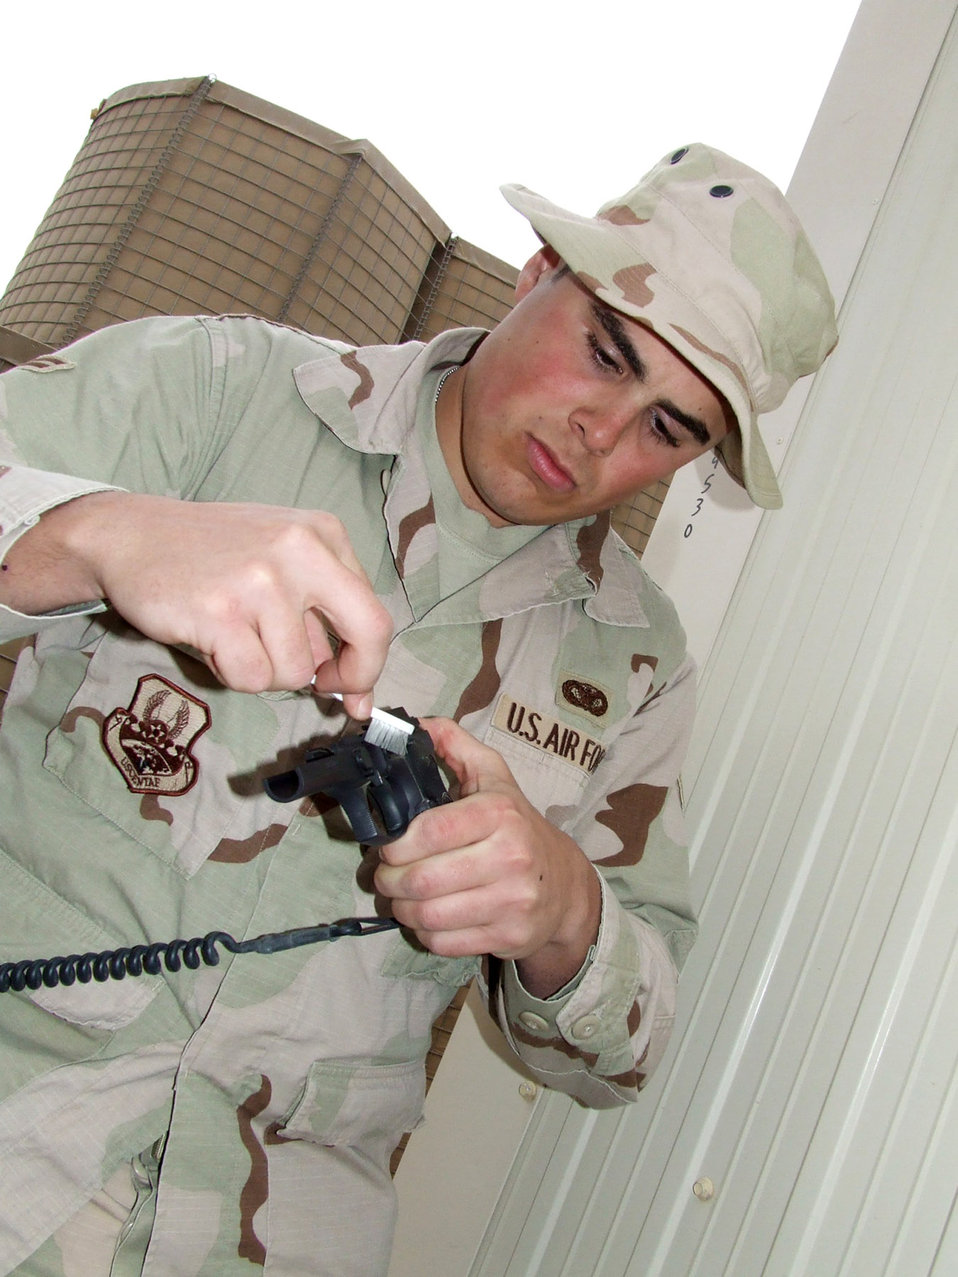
Airmen train Iraqi police

Airmen 1st Class Hector Meiereles cleans his M-9 pistol at Contingency Operating Base Speicher, Iraq. Airman Meiereles is assigned to the 732nd Expeditionary Security Forces Squadron's Detachment 6 and is deployed from the 96th Security Forces Squadron at Eglin Air Force Base, Fla.